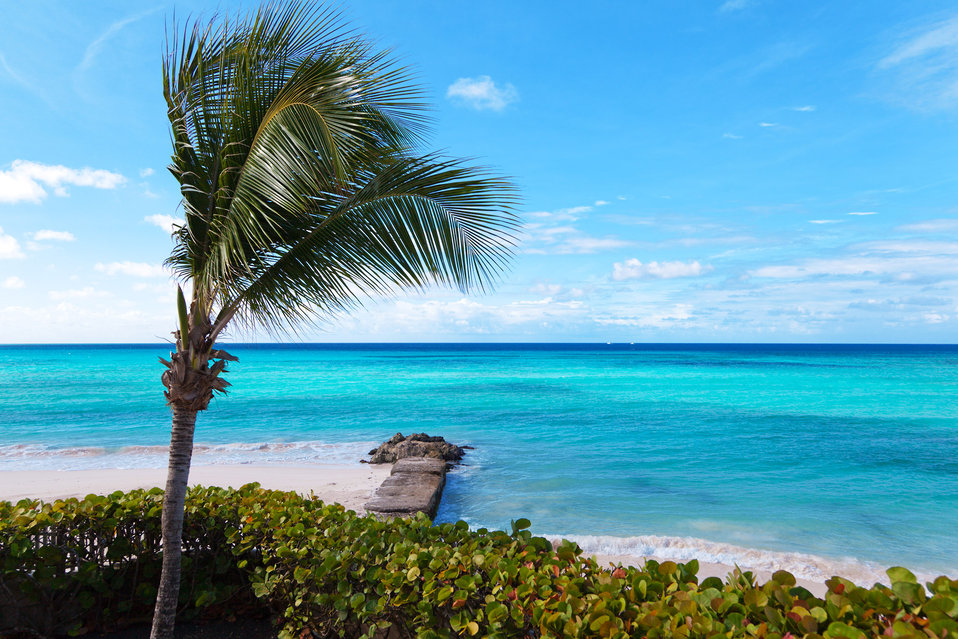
Palm tree and sea

A single palm tree on coast with sea and blue sky on the background.